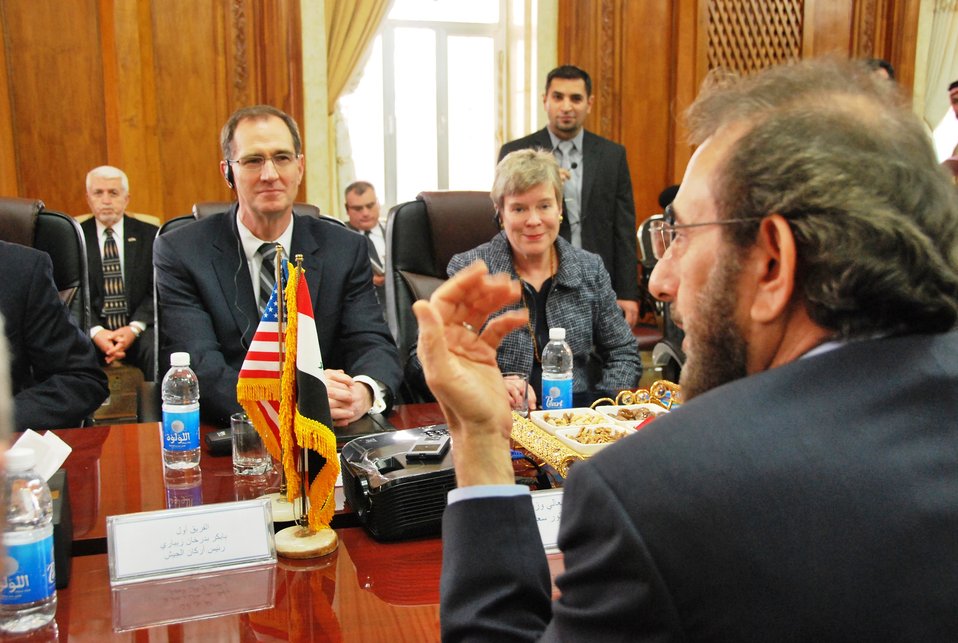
U.S., Iraq Sign Defense Cooperation Memo of Understanding

Iraqi Defense Minister Saadoun Al-Dlimi, foreground, and U.S. Undersecretary of Defense for Policy James Miller and U.S. Acting Undersecretary of State for Arms Control and International Security Rose Gottemoeller, background, discuss a memorandum of understanding they signed to make it easier for the two countries to work together in Baghdad, Iraq, December 5, 2012.